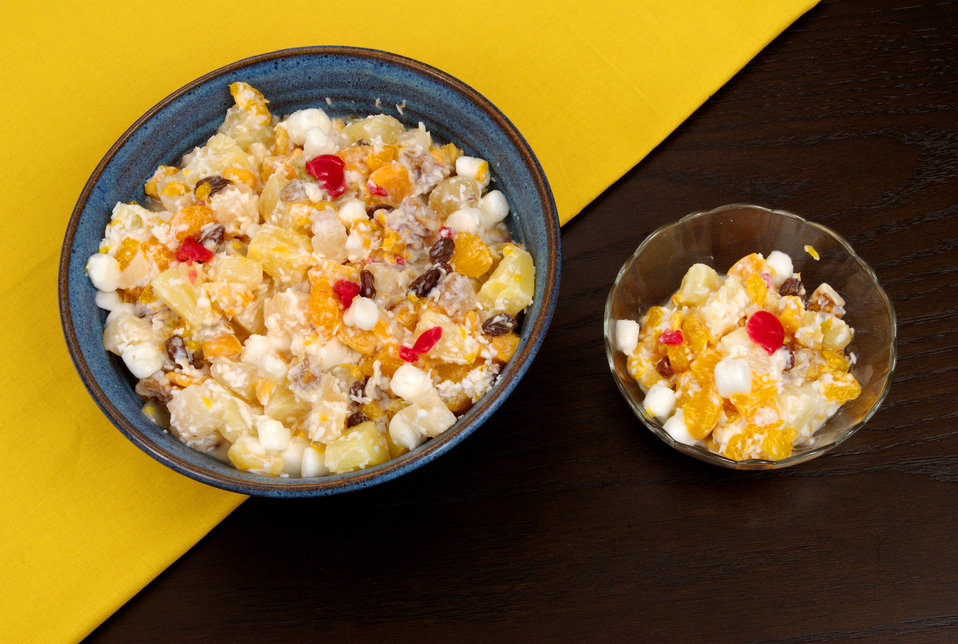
This is a Polynesian spin on a traditional dessert. Known as Hawaiian Ambrosia, this fruit salad contains the usual mandarin oranges, coconut, miniature marshmallows, non-fat yogurt, and fruit cocktail mix, but adds the pineapple, raisins, and pecans, imparting its Hawaiian flavor. This image depicts a small side dish containing a single serving of the salad taken from the larger bowl.